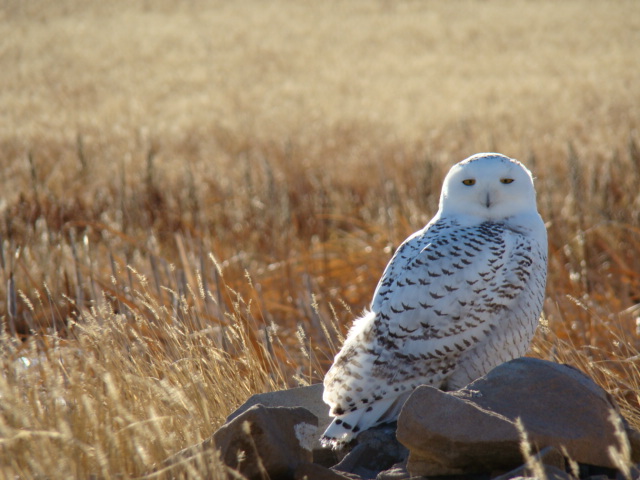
Snowy Owl

Every winter we get at least one really great Snowy Owl sighting on the Refuge!